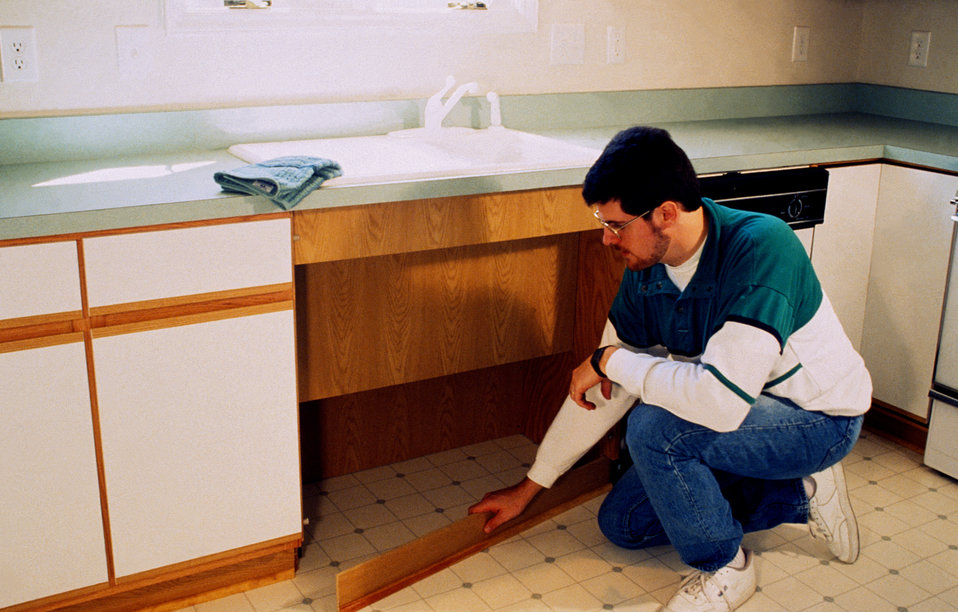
This 1994 image depicted the interior of a kitchen that was in the process of undergoing an ergonomic revision by a man who was at the moment installing an adaptable base cabinet, which meant a cabinet constructed so as to allow its base can be converted into a knee-space. By designing to accommodate the widest range of people, including those with, or without mobility impairments, the usability, and functionality of this kitchen facility had been greatly enhanced. Also, the location of these base cabinets beside critical appliances such as the sink and stove. facilitated the usability of these appliances by all. Base cabinets that convert into knee spaces are critical for people using wheelchairs, and those with stamina or balance limitations who must sit while completing extended food preparation activities.